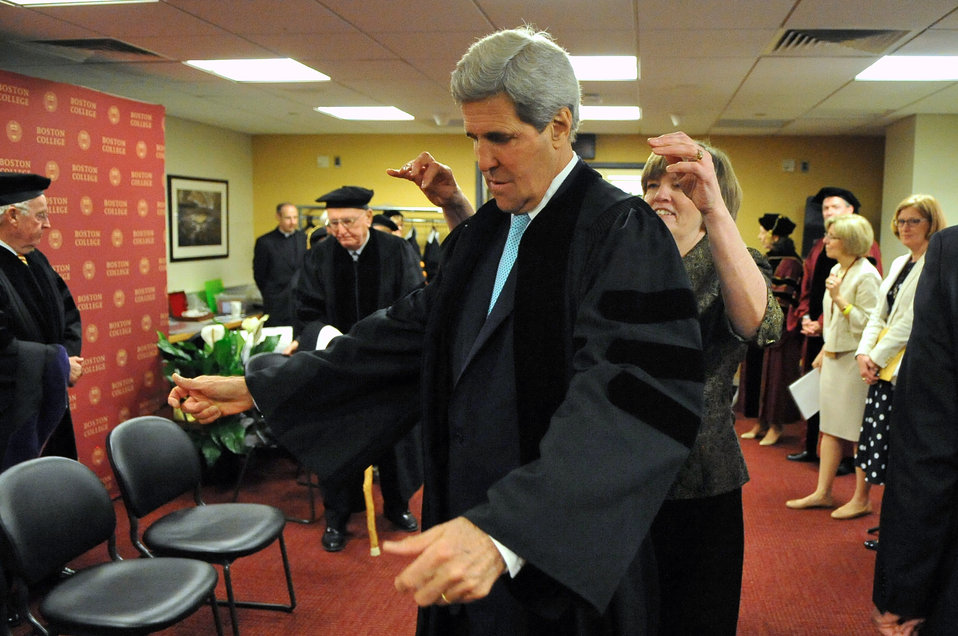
Secretary Kerry Dons Robe For Boston College Commencement Speech

U.S. Secretary of State John Kerry is assisted as he dons his robe before entering Alumni Stadium to deliver the commencement address at Boston College in Boston, Massachusetts, on May 19, 2014.